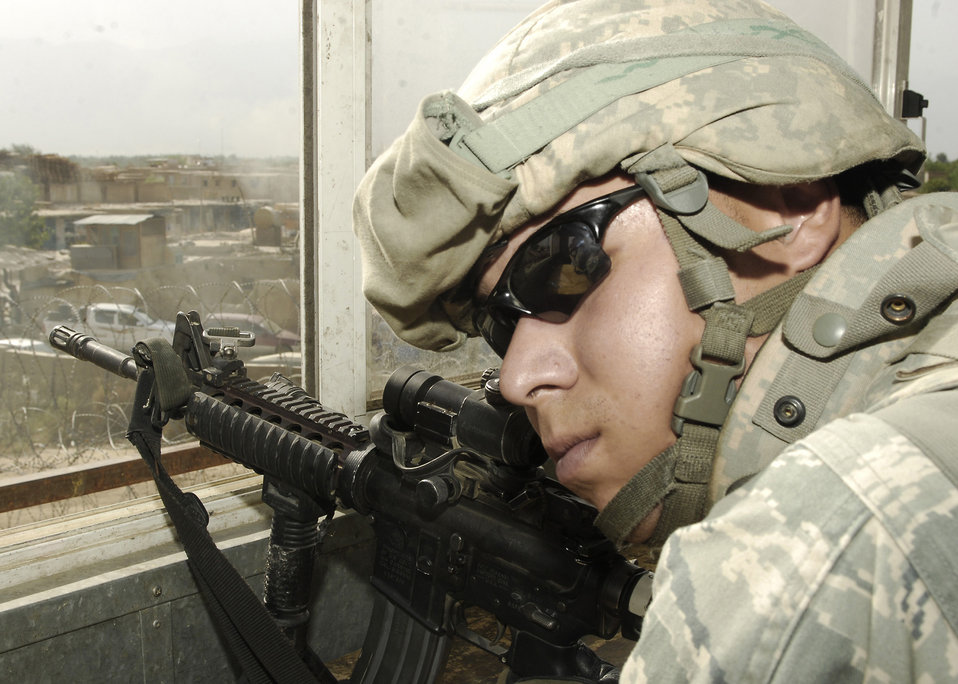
Lock and load

Staff Sgt. Steven Lugo-Velez guards the perimeter of Bagram Airfield, Afghanistan. Sergeant Lugo-Velez is originally from the Bronx, N.Y., and is deployed from Edwards Air Force Base, Calif. He is assigned to the 455th Expeditionary Security Forces Squadron.